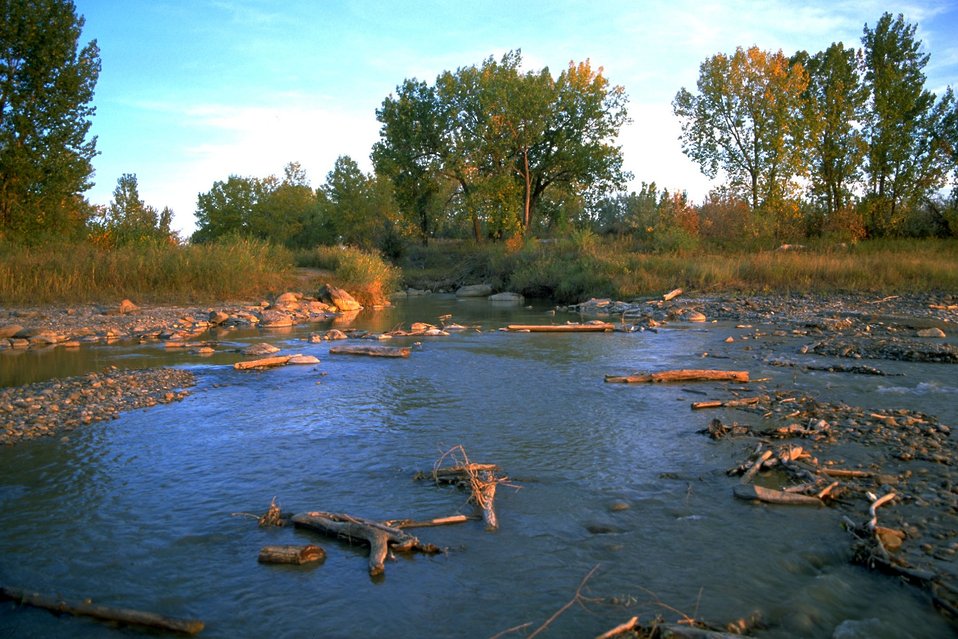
Jones Creek merging into the Yellowstone River